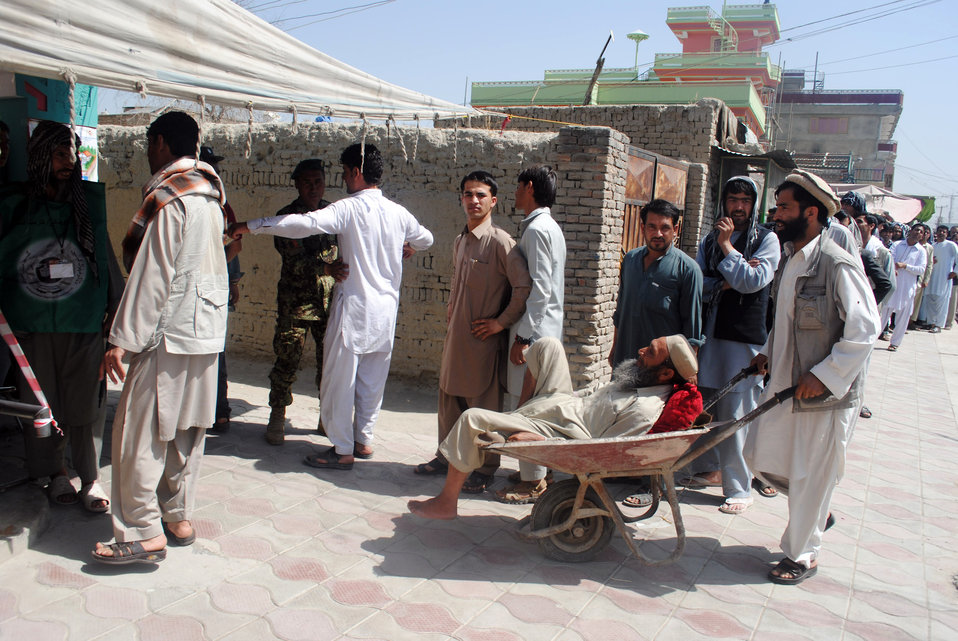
A man who is not able to walk is taken to a voter station in handcart in ninth police district in Kabul.